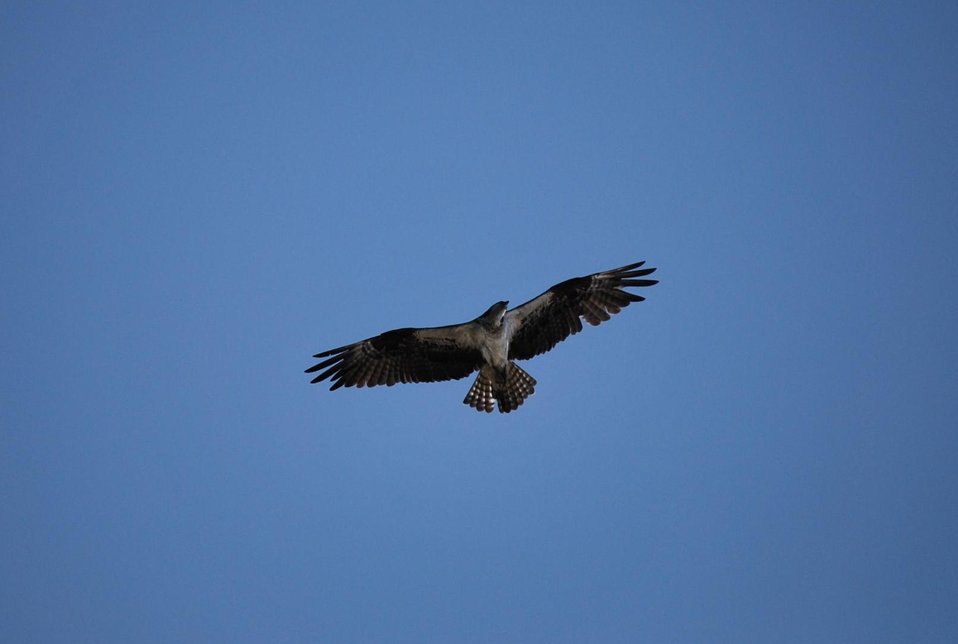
An osprey flying above silhouetted by a deep blue sky.